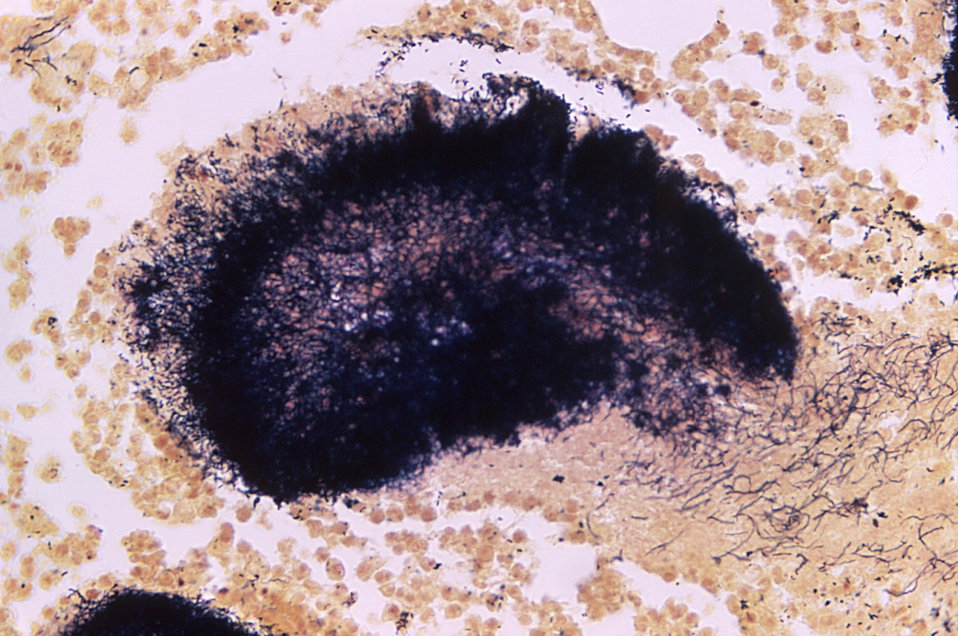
Magnified 1125X, this Brown & Brenn-stained photomicrograph revealed the presence of a single large chronic inflammatory granule due to an unidentified pathogen, found in a sample of a canine tissue specimen in a case of actinomycosis.